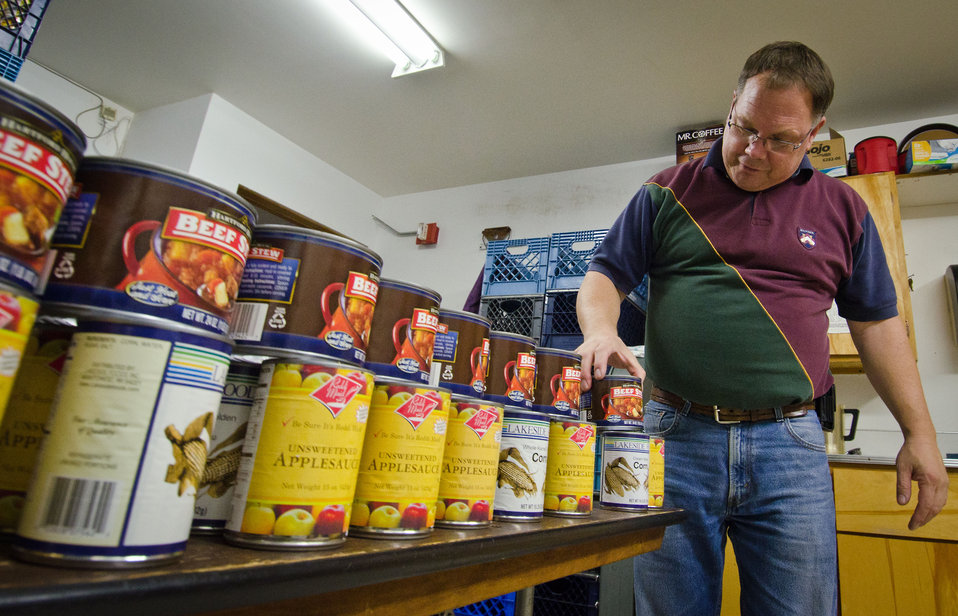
Tukwila Pantry Executive Director Joe Tice stocks the tables with canned goods; at the food bank he created, in Tukwila. WA, on Thursday, October 20, 2011. The pantry provides monthly food bank services to individuals and families in cities of Tukwila, SeaTac, Burien and the Boulevard Park community. Congregate meal service is held each Tuesday at the Riverton Park United Methodist Church. The church provides some funds, several large rooms, and outdoor operating space for the pantry’s food distribution, shipping container storage units, trailer, tents, shelters and refrigeration truck. The pantry's weekly Tuesday’s Table provides 150 hot meals to seniors, low-income families, homeless individuals and those in transition. Additionally, emergency referral services are provided to assist individuals connecting with agencies that can address their needs. Joe Tice grew up in Tukwila and feels compelled to give back to economically challenged community of 25,000 families in 3,000 households. “Since the pantry’s founding in 2000, census figures show poverty has risen 300%,” said Joe Tice. “85-95% of elementary school children are enrolled in SNAP (U.S. Department of Agriculture Supplemental Nutrition Assistance Program).” At the pantry’s height, it delivered 3.5 million pounds of food (2009), but with the economic downturn Tice projects 2011 deliveries to total 2.5 million pounds. Tice considers Tukwila Pantry as one of the smaller distribution points in the greater Seattle area. Some canned and dry goods are provided by
The Emergency Food Assistance Program (TEFAP) a Federal program that helps supplement the diets of low-income needy persons, including elderly people, by providing them with emergency food and nutrition assistance. A significant amount of the pantry’s food comes through Northwest Harvest, Washington's only nonprofit statewide food bank distributor; and Food Lifeline, the largest nonprofit food distributor in the state who solicit, receive, and distribute over 24 million meals of food to nearly 700,000 people through our network of 300 food banks (such as Tukwila Pantry), shelters and meal programs.